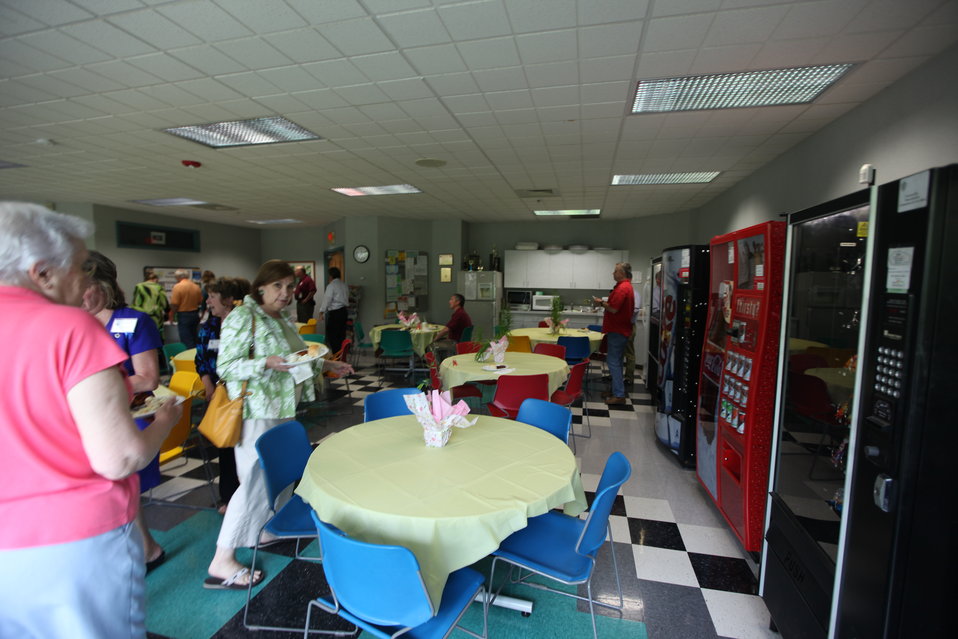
Northeast Region Employee Appreciation Awards

Luncheon